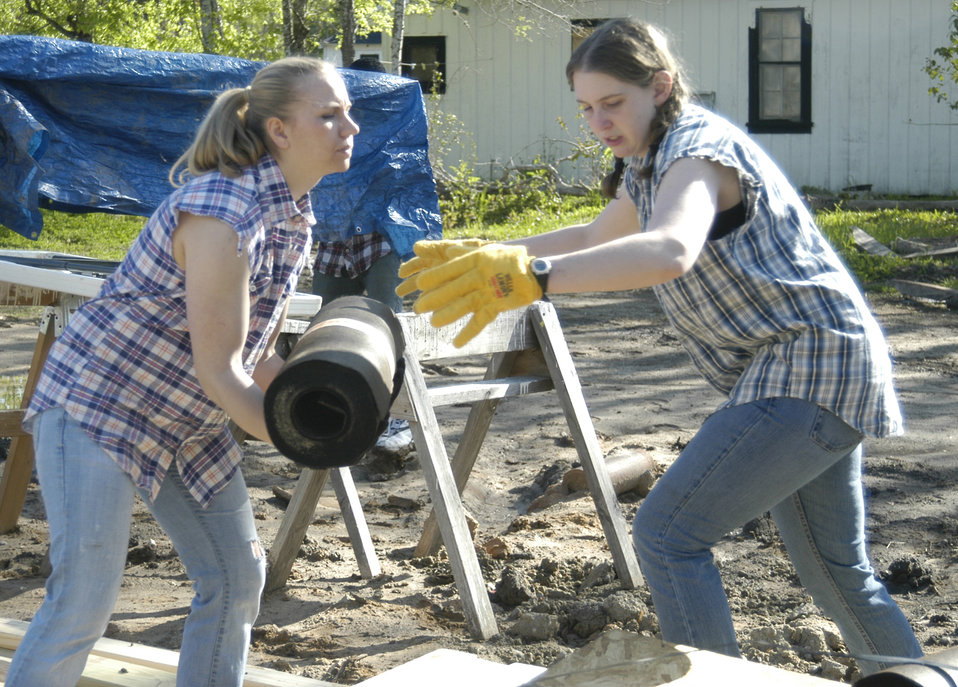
Cadets trade beaches for hammers during alternative spring break

U.S. Air Force Academy Cadet 3rd Class Sarah Sauter and Cadet 2nd Class Bridget Flatley work in muddy terrain while building a house as part of a Habitat for Humanity project March 22, 2010, in Victoria, Texas. Cadets volunteered for the project as part of the Academy's alternative spring break program.